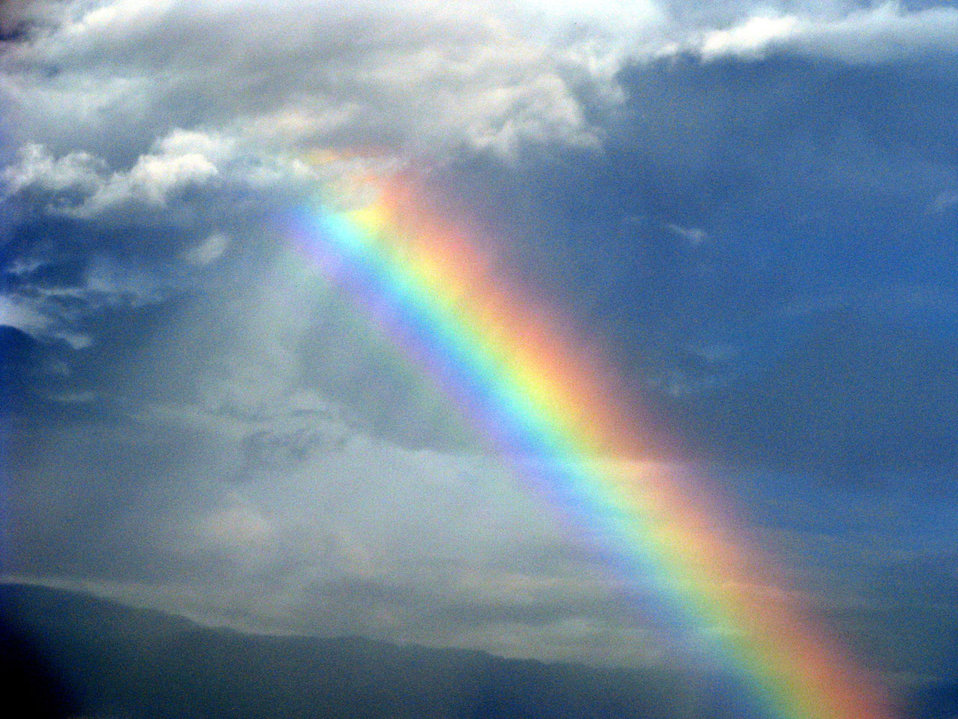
Enhanced rainbow

Close up of rainbow, colors enhanced..